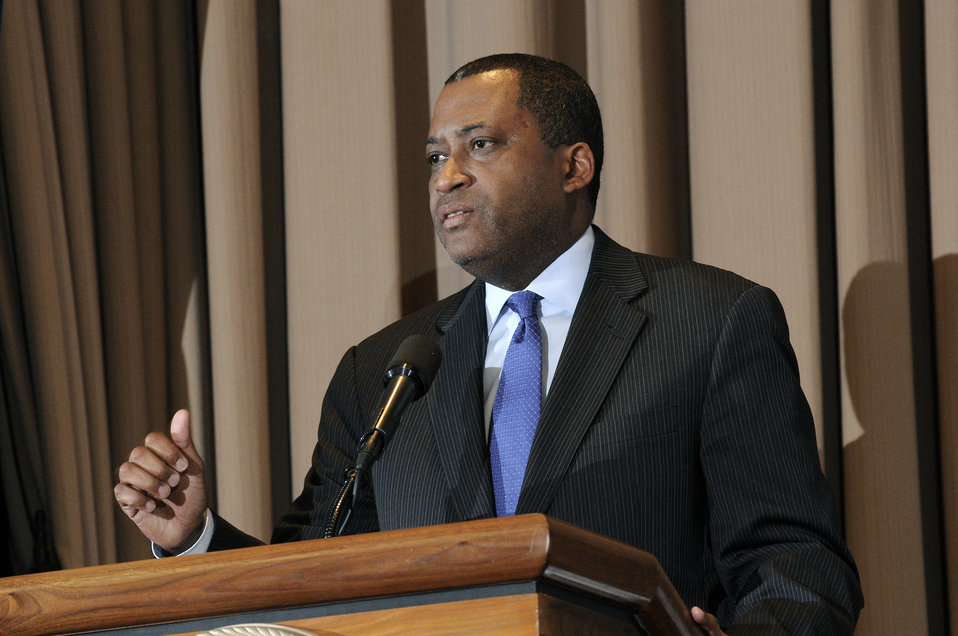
U.S. Department of Agriculture Assistant Secretary for Civil Rights Dr. Joe Leonard speaks at the U.S. Department of Agriculture's (USDA) Dr. Martin Luther King, Jr. National Service Day presentation of the Drum Major for Service Awards at the USDA Jefferson Auditorium in Washington, D.C. on Tuesday, Jan. 15, 2013.